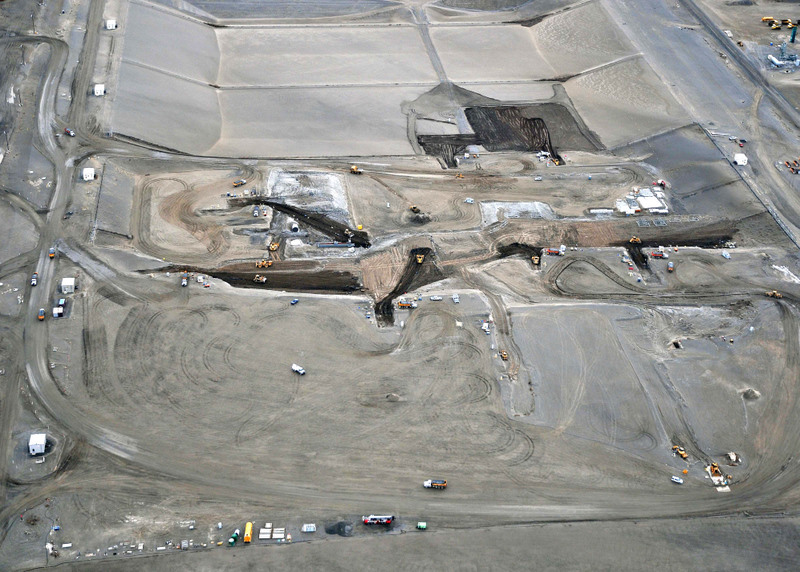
Work completed during FY 2011 at Hanford

An aerial view shows the Environmental Restoration Disposal Facility.